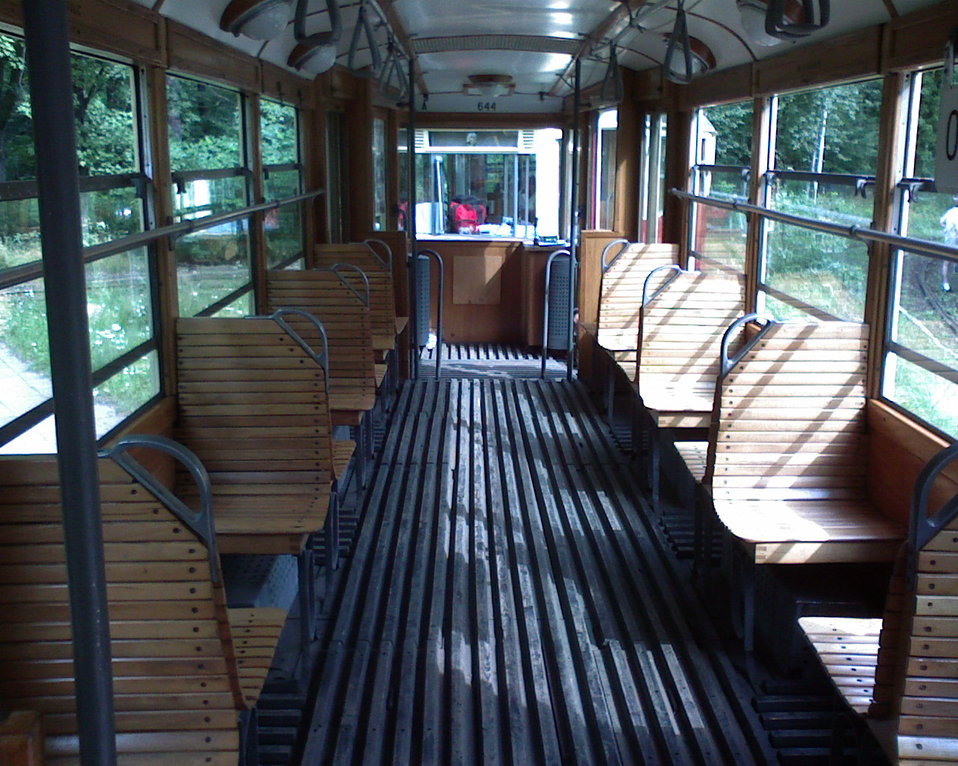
Inside view of the Konstal 5ND tram (#644) on the '0' line in Łódź, Poland.